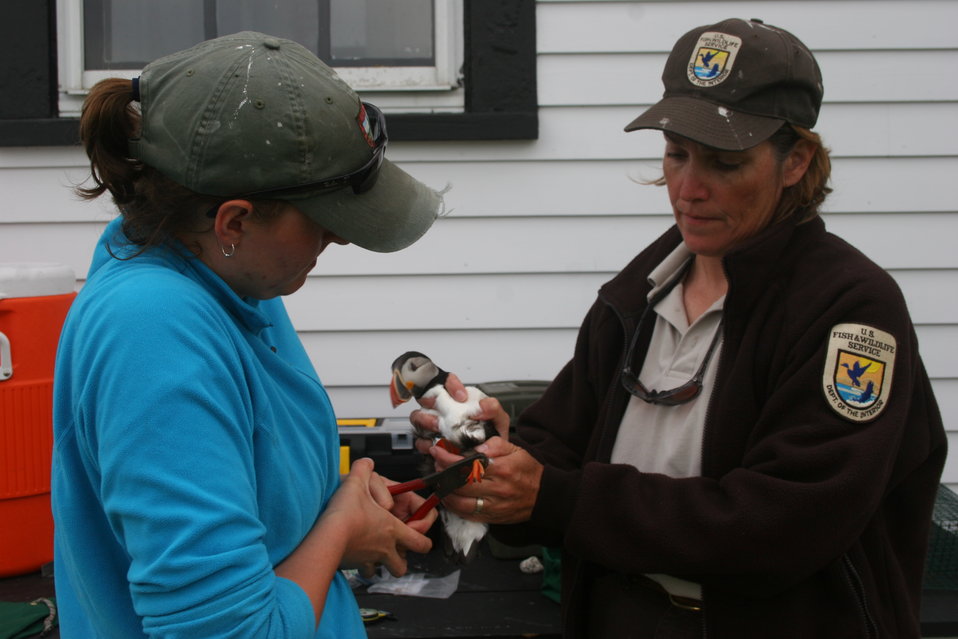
FWS Workers Tagging A Puffin